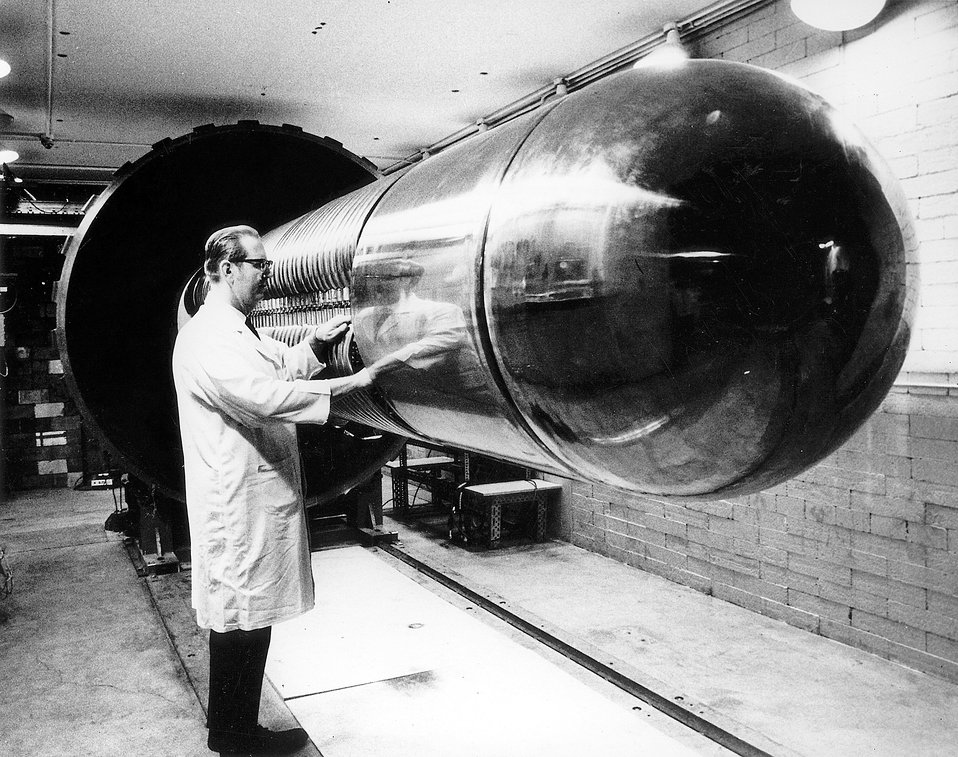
A new Dynamitron installed in the Physics Division of Argonne provides an intense source of fast neutrons for experiments on neutron-induced nuclear reactions.
c.1970